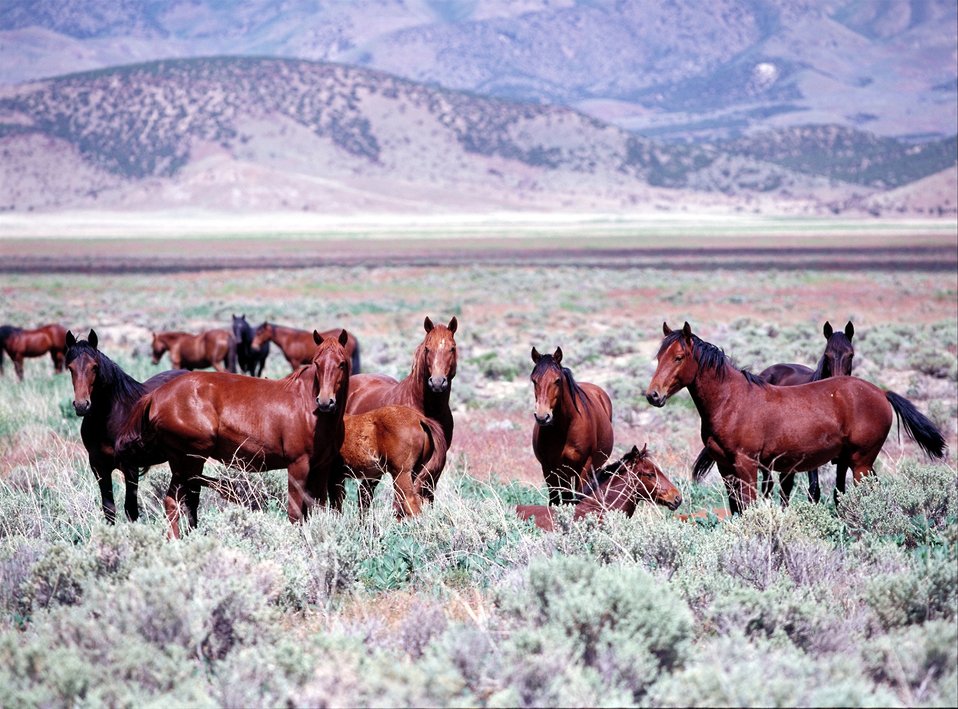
Onaqui Herd near Dugway, Utah.